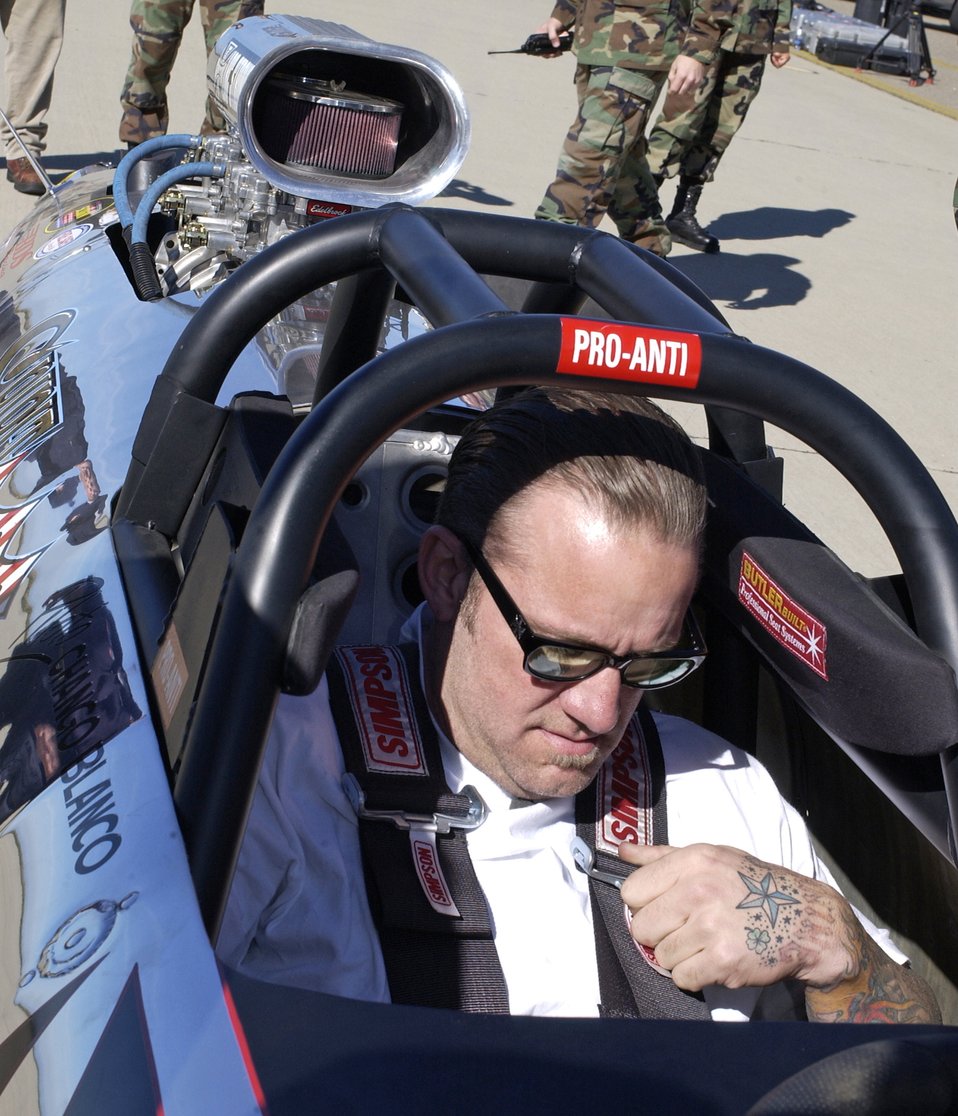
Monster Garage: Take II

VANDENBERG AIR FORCE BASE, Calif. -- Jesse James from the TV show